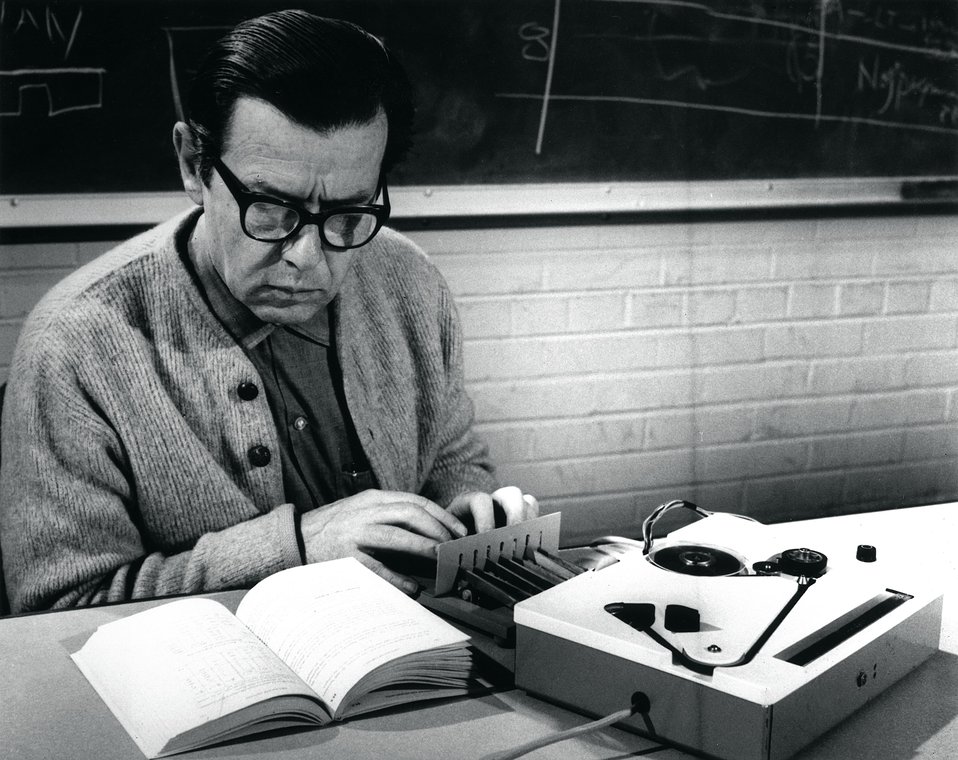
The 'Argonne Braille Machine' can be used to transcribe material directly onto 1/4 inch tape. The tape can be replayed to form braille characters.
c.1970